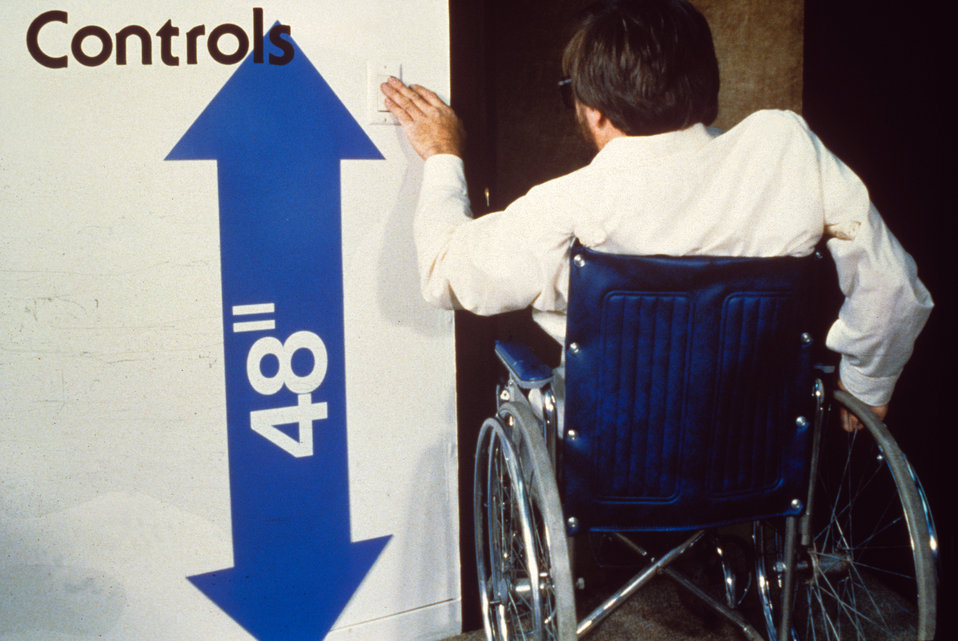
Photographed in 1997, this image depicted a wheelchair-seated man as he was interacting with a wall-mounted light switch. Crucial to the location of the switch was the height at which it was mounted to the wall, which in order to be accessible to as many different users, must be no more than fourty-eight inches from the floor level. At this height, those seated in a wheelchair, as well as those standing, could easily use the switch without having to maintain an awkward body position.